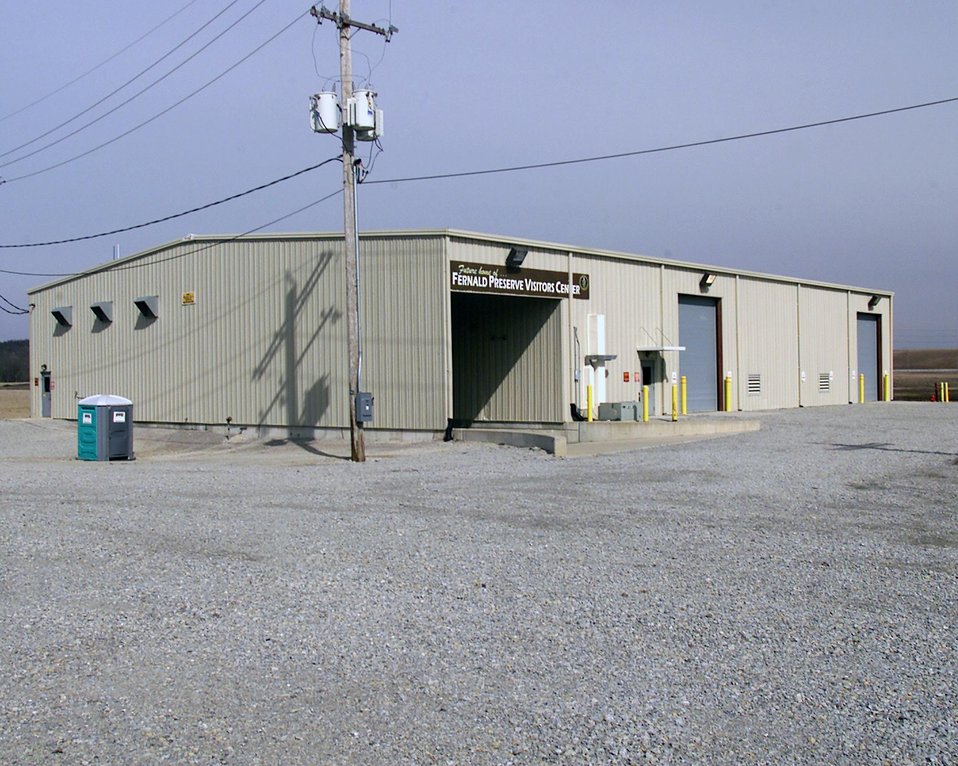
Southwest corner of a warehouse that was built to support site remediation activities and was eventually transformed into the Fernald Preserve Visitor Center.